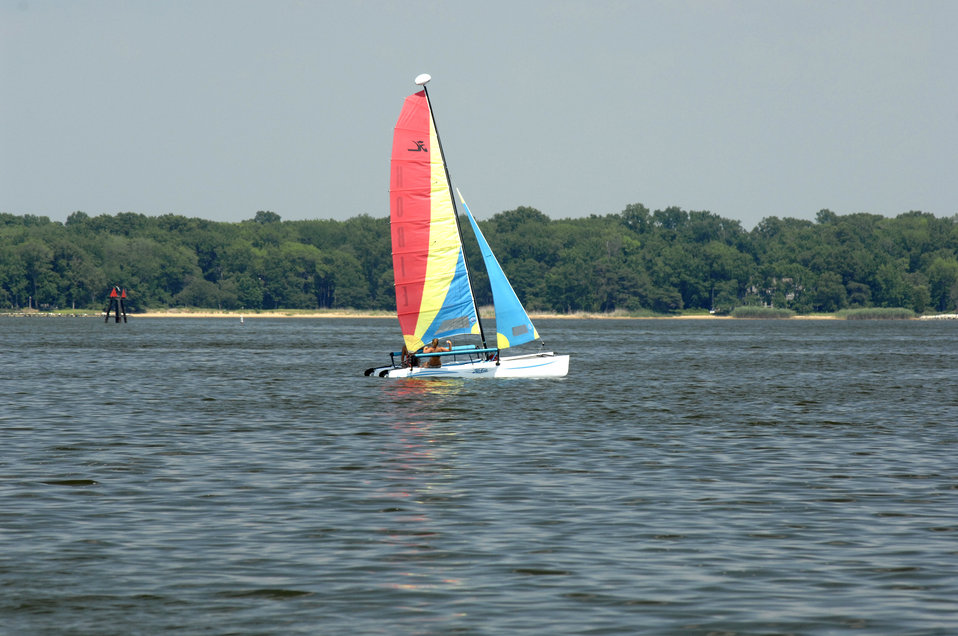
Boaters enjoy sailing in the Chesapeake Bay, Maryland on July 14, 2008.